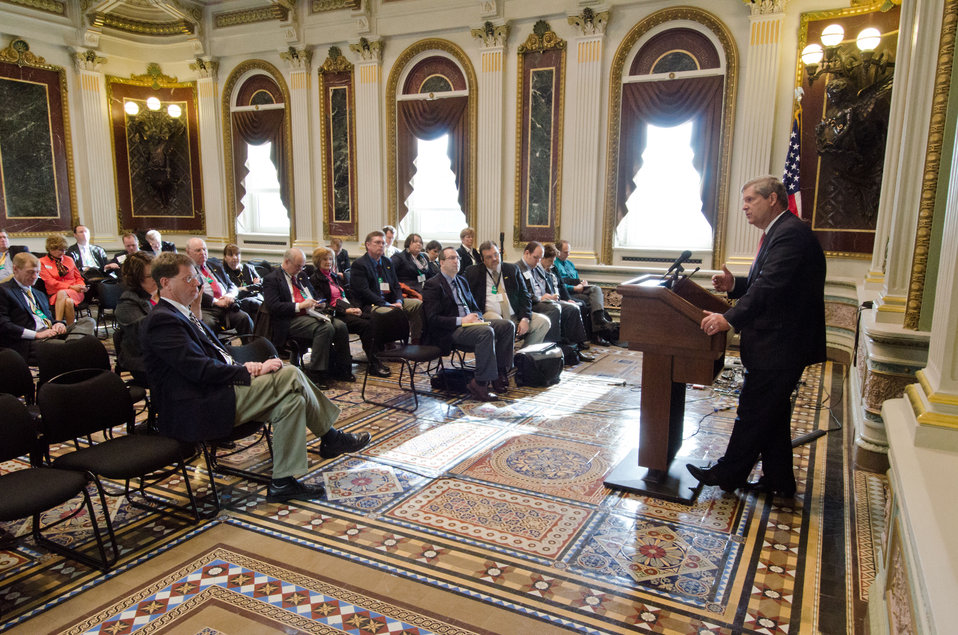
Agriculture Secretary Tom Vilsack discussed the strength of the rural economy at the spring National Association of Farm Broadcasters (NAFB), “Washington Watch” member retreat in Washington, D.C. This year the meeting was held in the Eisenhower Executive Office Building, Indian Treaty Room Tuesday, April 24, 2012 featuring United Sates Department of Agriculture and Obama Administration officials. This opportunity provides an occasion to highlight efforts to rebuild and revitalize rural America, including efforts for the agricultural community. NAFB is the recognized and trusted source of agricultural and rural lifestyle information for America with approximately 200 members who broadcast via radio in nearly every state in the country.